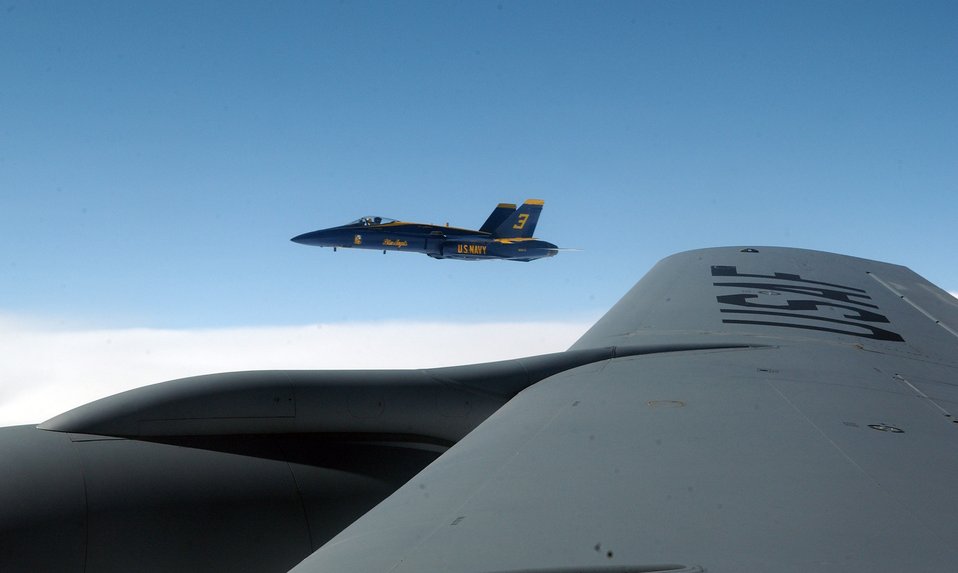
Blue Angels over Alaska

An F/A-18 Hornet from the Navy's Blue Angels stands by to receive fuel from a KC-135 Stratotanker over Alaska on Aug. 14. The Blue Angels team had performed at an air show at Elmendorf Air Force Base, Alaska.